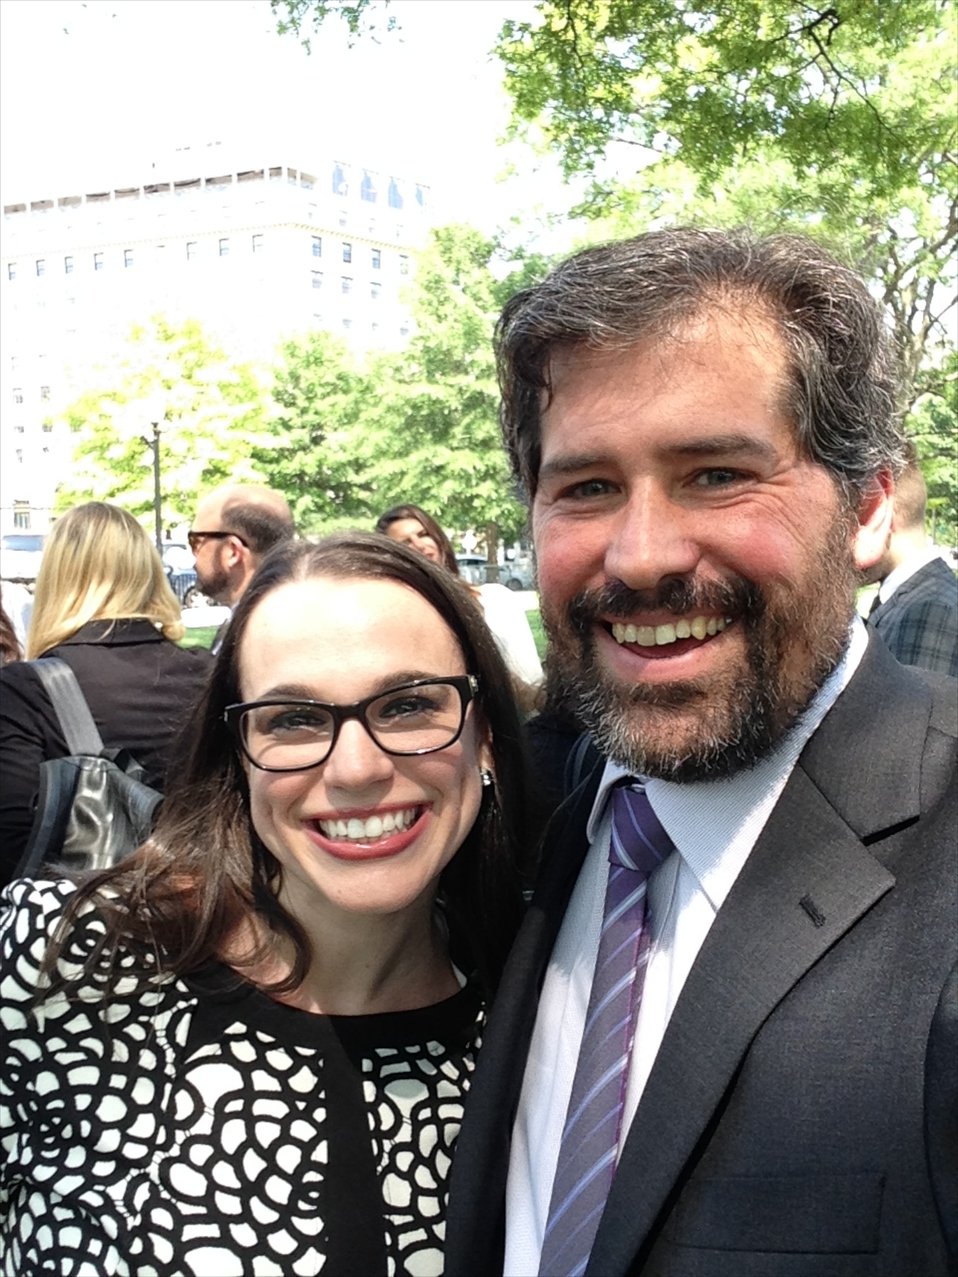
NARA Tumblarians Natalie Rocchio of the Center for Legislative Archives and Darren Cole from the Office of Innovation waiting to enter the White House for President Obama first ever Tumblr Q&A event.; Location: South East gate to the White House, Washington, D.C.